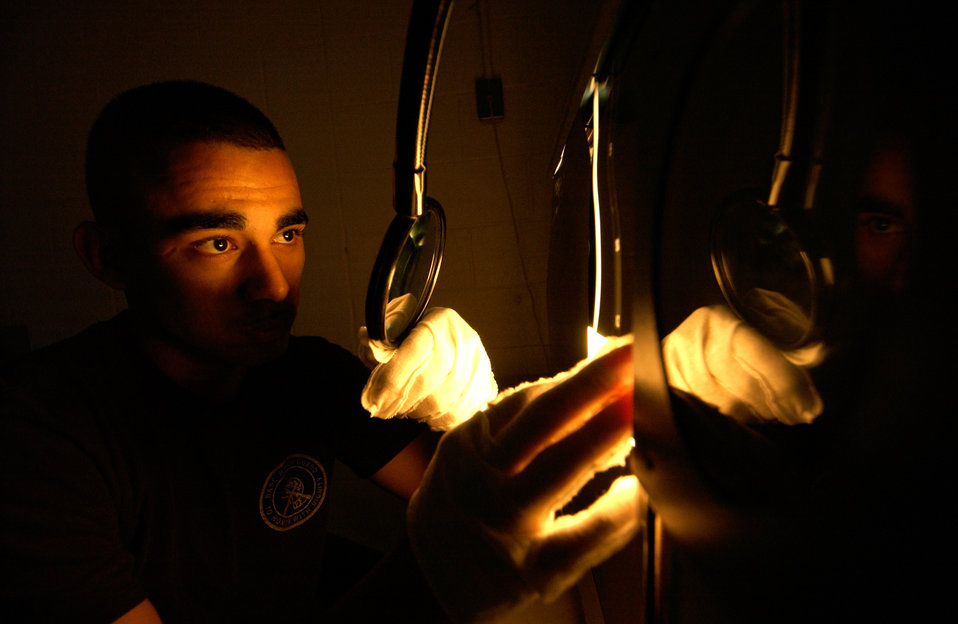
Checking for cracks

CHARLESTON AIR FORCE BASE, S.C. -- Senior Airman Jorge Vargus checks an X-ray film for cracks recently. Airman Vargus is a nondestructive inspection testing journeyman assigned to the 437th Maintenance Squadron here.